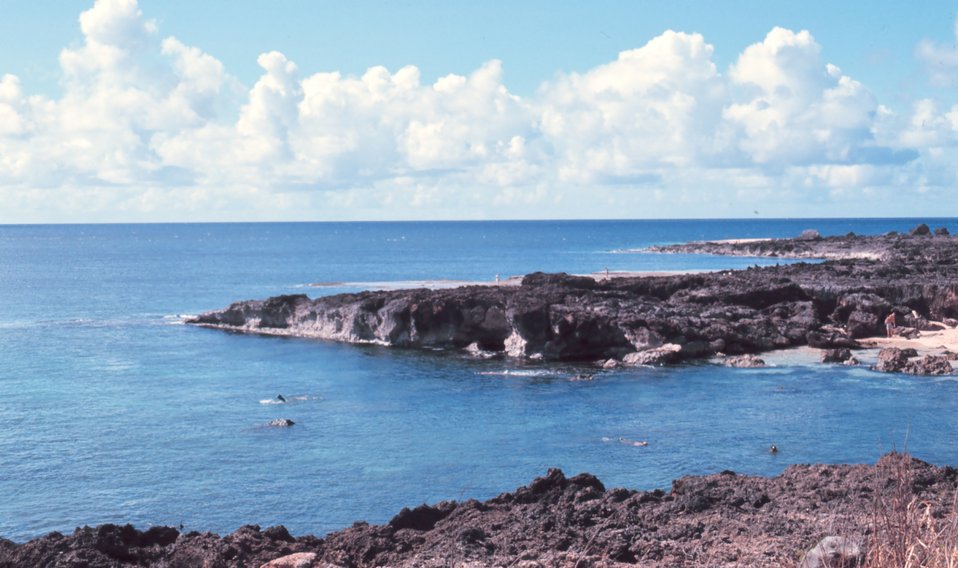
Hawaiian island coastline